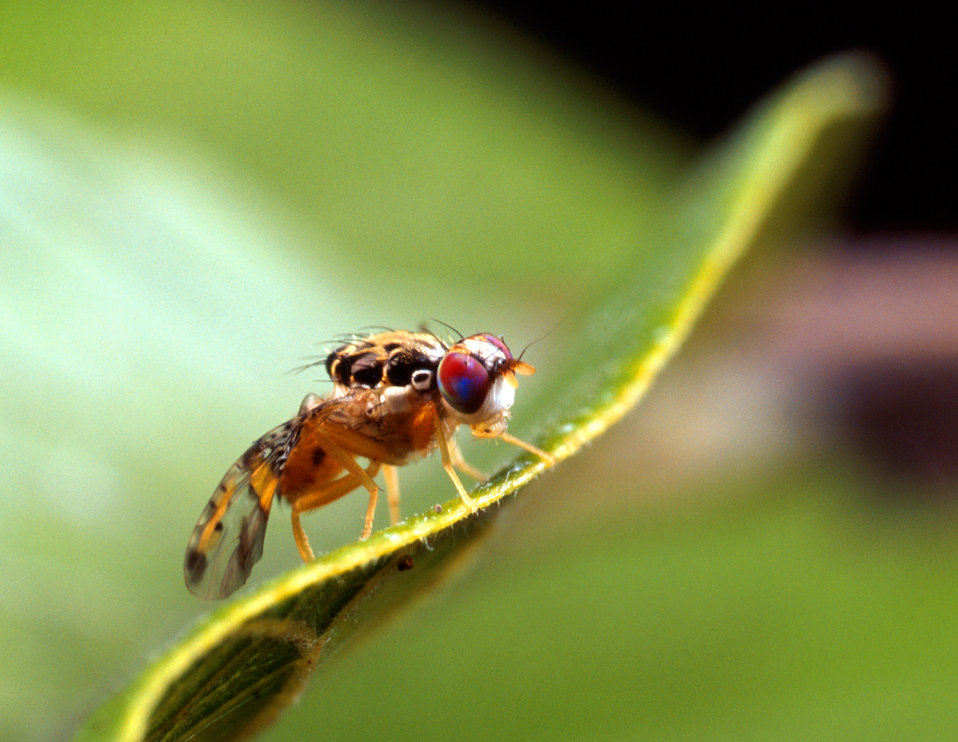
The production of medflies can be realized in the laboratory by bathing medfly eggs in warm water. This process kills the female embryos but doesn't harm the male embryos. In the pupal stage, the males can be irradiated to render them sexually sterile.